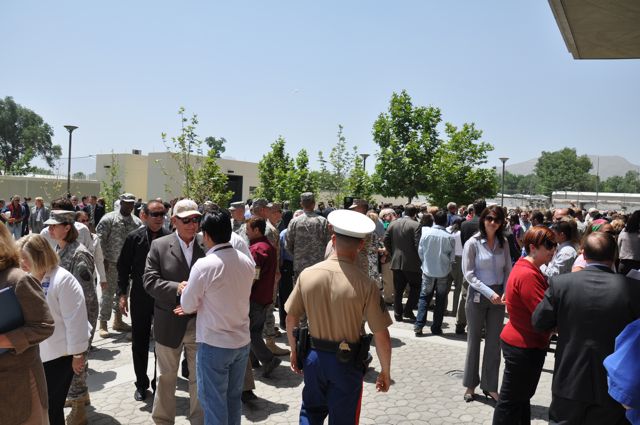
Memorial Day at US Embassy in Kabul